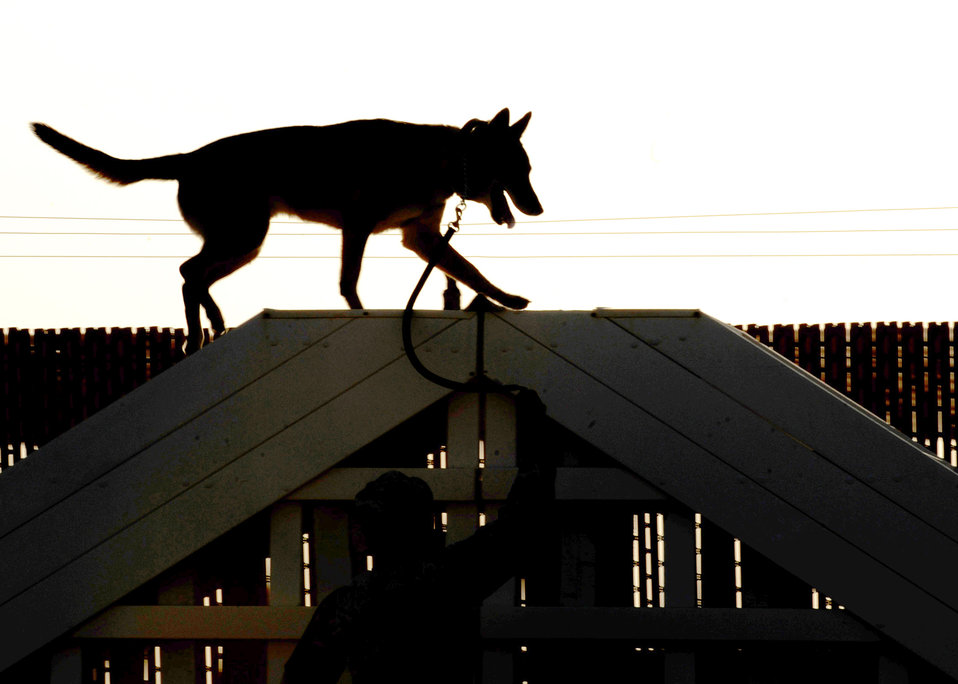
386 ESFS MWD

Gabe, a 12-year-old Belgian Malinois military working dog, scales part of an obstacle course July 27, 2010, in Southwest Asia. The course provides regular exercise and training for the dogs.